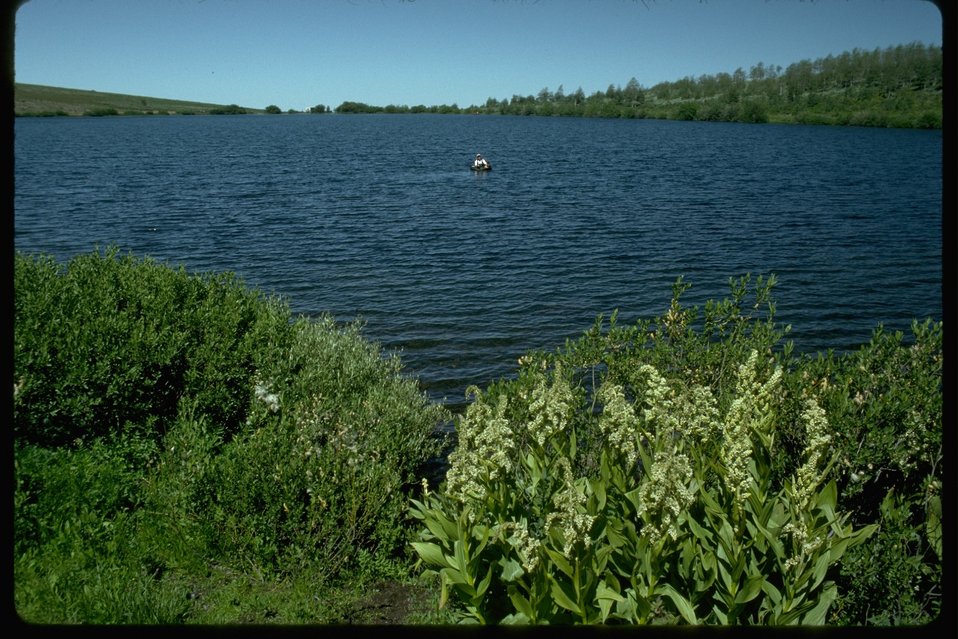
A low angle view of Fish Lake.